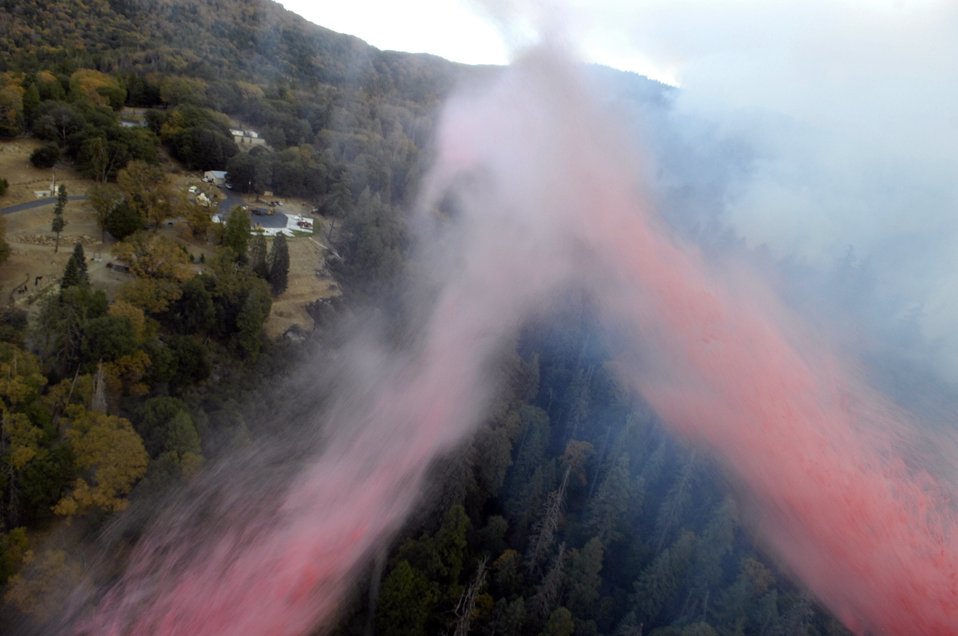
C-130s fight California wildfires

Approximately 3,000 gallons of fire retardant is deployed Oct. 24 over the Poomacha Fire in North San Diego County, Calif. The C-130 Hercules and crew are assigned to the 302nd Airlift Wing from Peterson Air Force Base, Colo. The aircraft launched from Channel Islands Air National Guard Station, Calif. Air Force Reserve Command officials sent two of its designated firefighting C-130H3 aircraft to help battle the raging wildfires in Southern California.